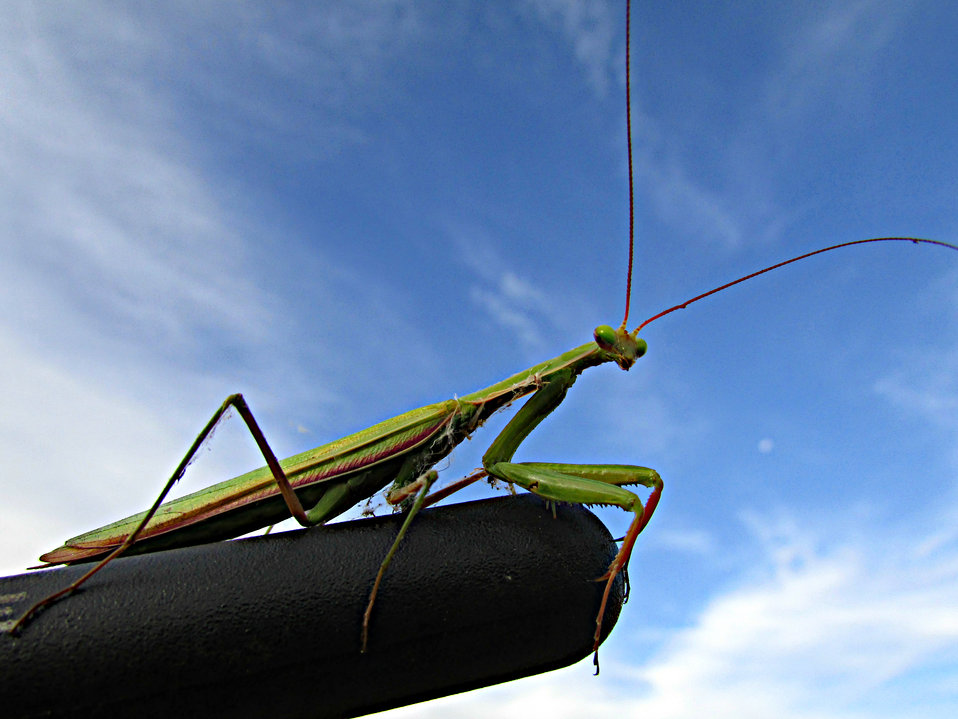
Unique Visitor

Check out the praying mantis that was hanging out in our tool shop this morning! He is definitely the most unique visitor of the year.